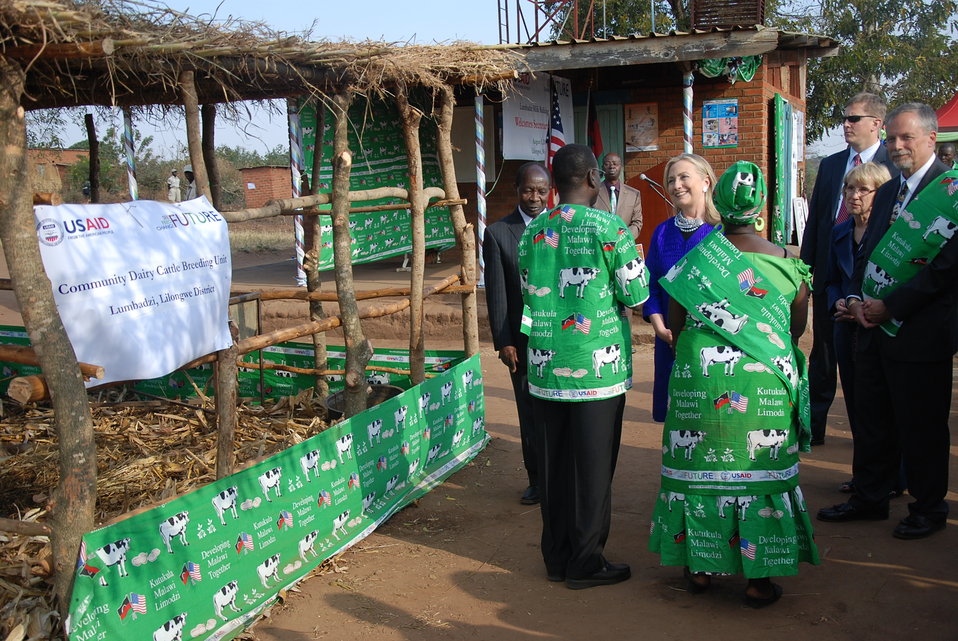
Secretary Clinton With the Lumbadzi Milk Bulking Group in Malawi

U.S. Secretary of State Hillary Rodham Clinton presents a Holstein bull to the Lumbadzi milk bulking group in Lilongwe, Malawi, August 5, 2012.